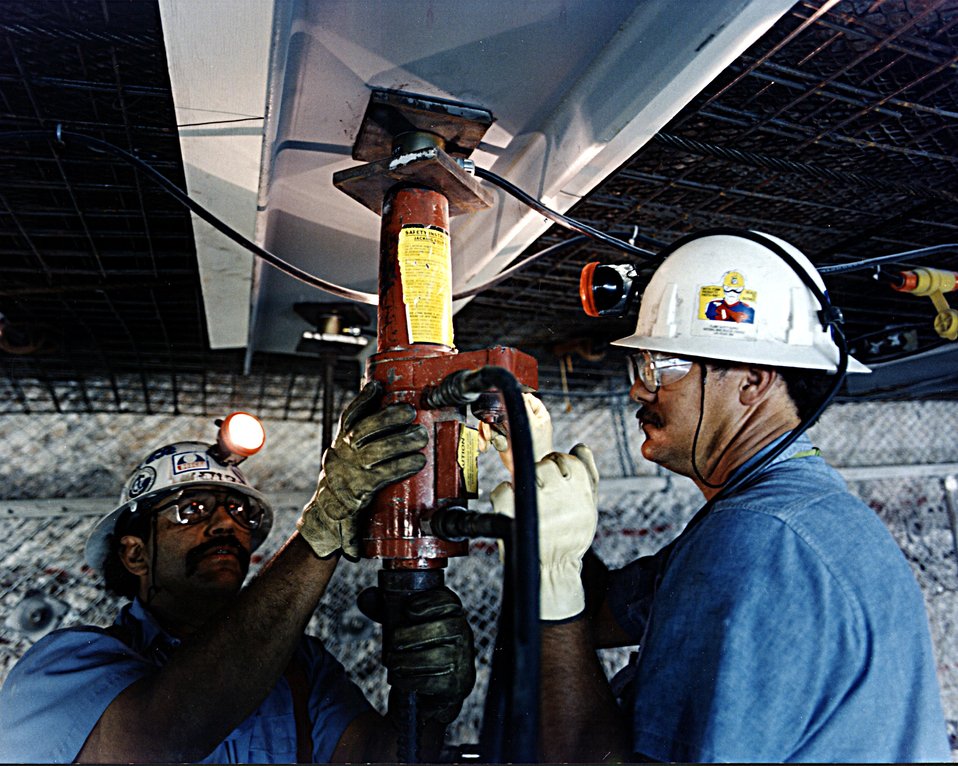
WIPP UNDERGROUND OPERATIONS PERSONNEL INSTALLING LOAD CELLS IN ROOM 1, PANEL 1.

THE LOAD CELLS BEING INSTALLED IN THIS IMAGE CAN INDEPENDENTLY MONITOR STRAIN FROM THE OVERLYING GEOLOGY. THE WASTE ISOLATION PILOT PLANT, LOCATED IN SOUTHEASTERN NEW MEXICO, IS A DOE RESEARCH AND DEVELOPMENT FACILITY DESIGNED TO DEMONSTRATE THE SAFE DISPOSAL OF DEFENSE RADIOACTIVE WASTE IN ANCIENT SALT BEDS.